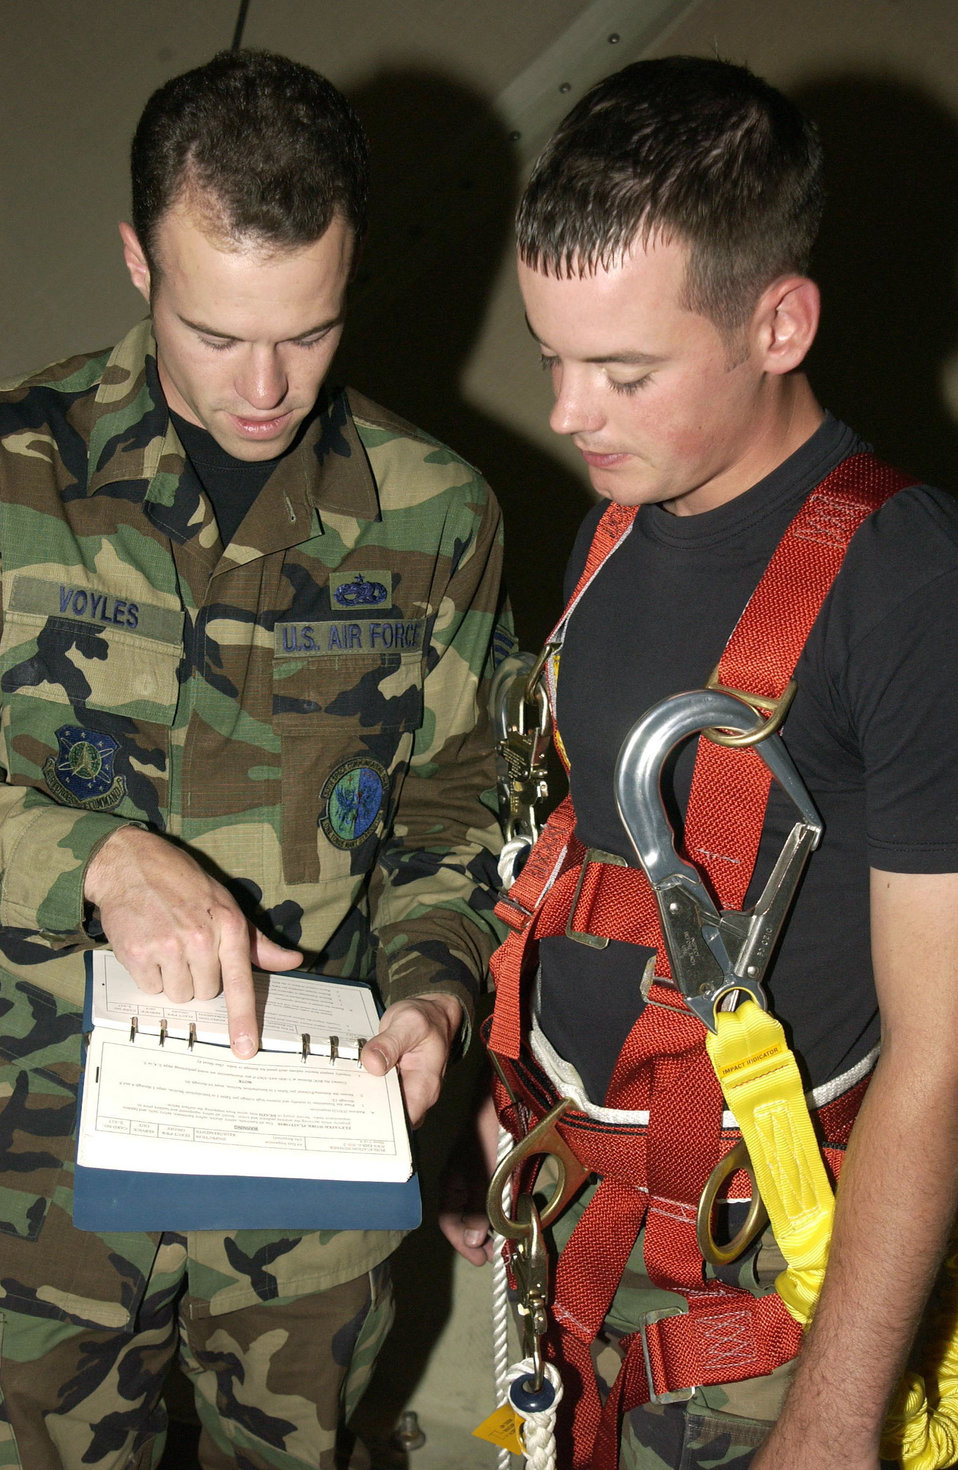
Preventative maintenance

ORCUTT, Calif. -- Staff Sgt. Erik Voyles (left) reviews work cards with Airman 1st Class Christopher Garret before performing preventative maintenance inspections on the next generation weather radar located on New Love Hill here. Both Airmen are ground radar systems maintenance technicians assigned to the 30th Space Communications Squadron at Vandenberg Air Force Base, Calif.